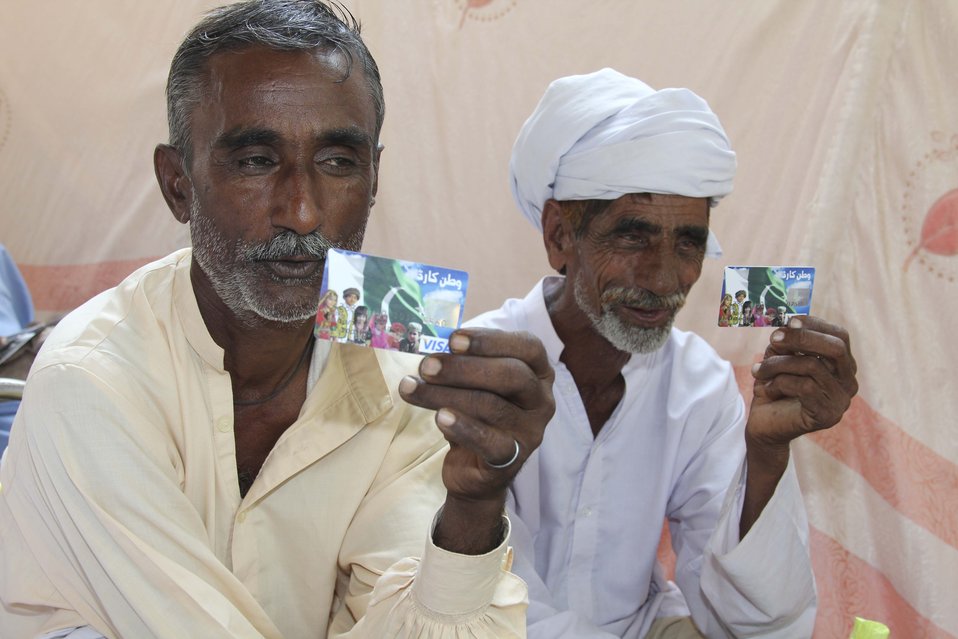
Citizens Damage Compensation Program